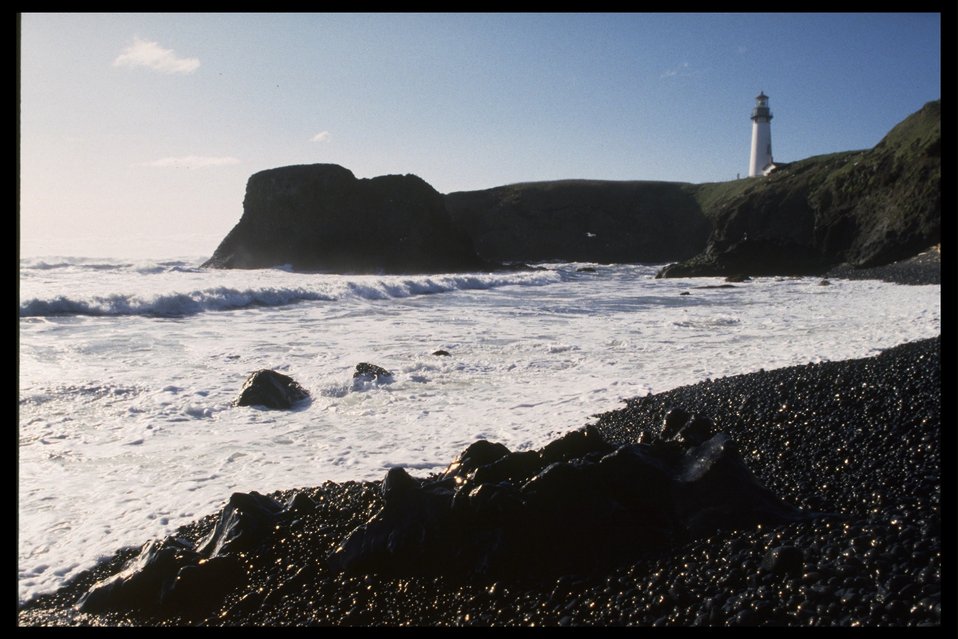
Yaquina Head Lighthouse.